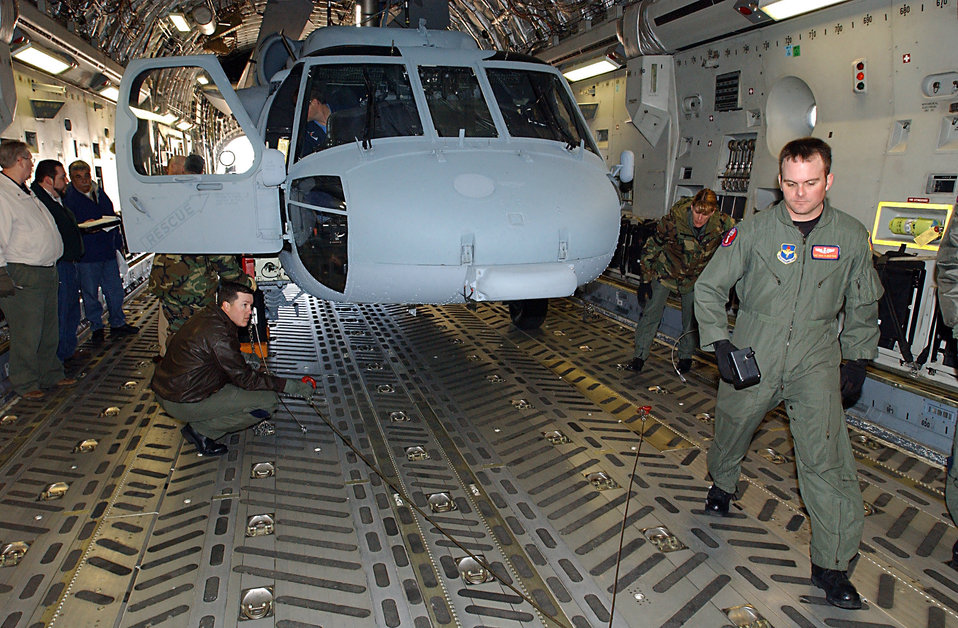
MH-60S helicopter load validated on C-17

ALTUS AIR FORCE BASE, Okla. -- Staff Sgt. Kris Albertson (right) prepares to disconnect the winch hook from the toe bridal on an MH-60S Knight Hawk during a load validation here. It was the first time a Knight Hawk had been loaded into a C-17. The test was successful. Sergeant Albertson, from the 58th Airlift Squadron here, was the lead loadmaster for the helicopter's load validation.